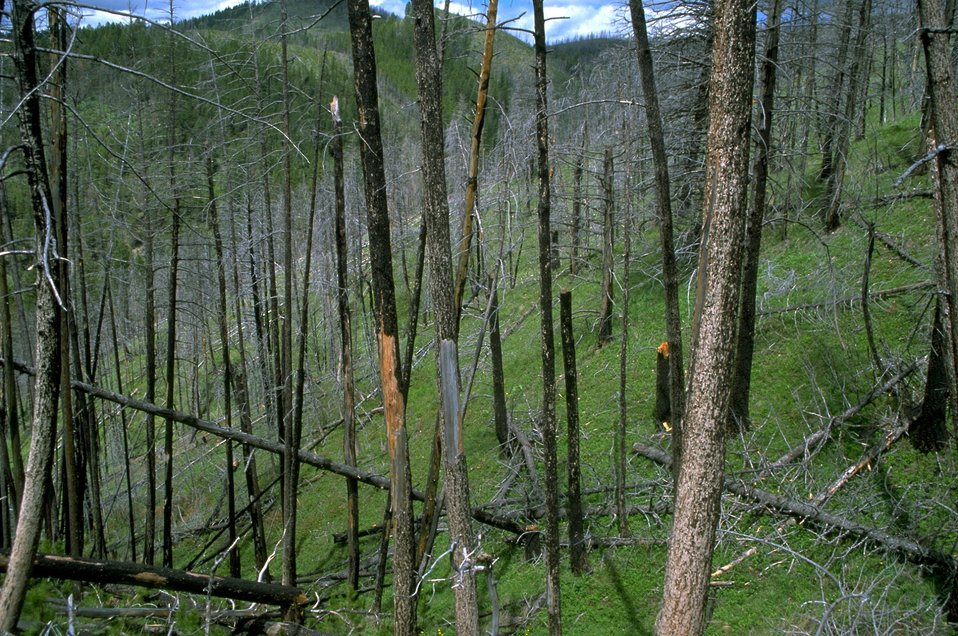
An old burn area in the Judith Mountains